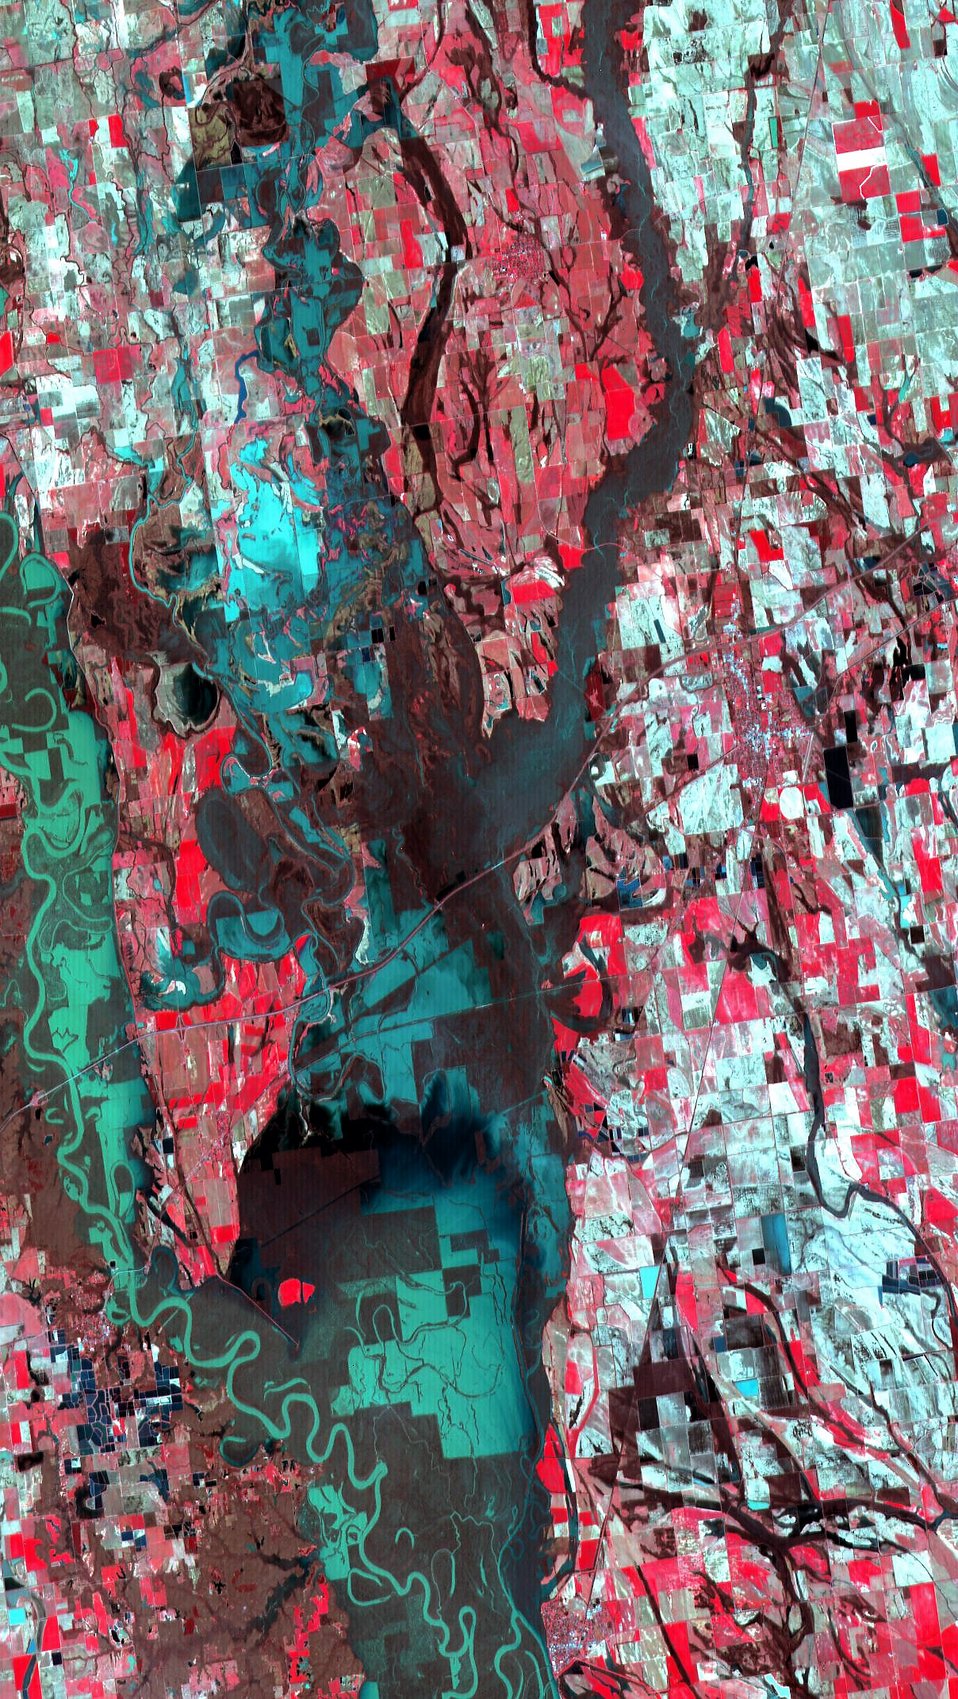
Airmen help flooding recovery efforts

An Eagle Vision satellite image shows a flooded area in Clarendon, Ark., with the original river path in the lower left corner. Farmland appears as red boxes, while darker red shows partially submerged farmland. Green boxes detail property completely submerged by water. Much of the lower middle of this photo shows submerged farmland.